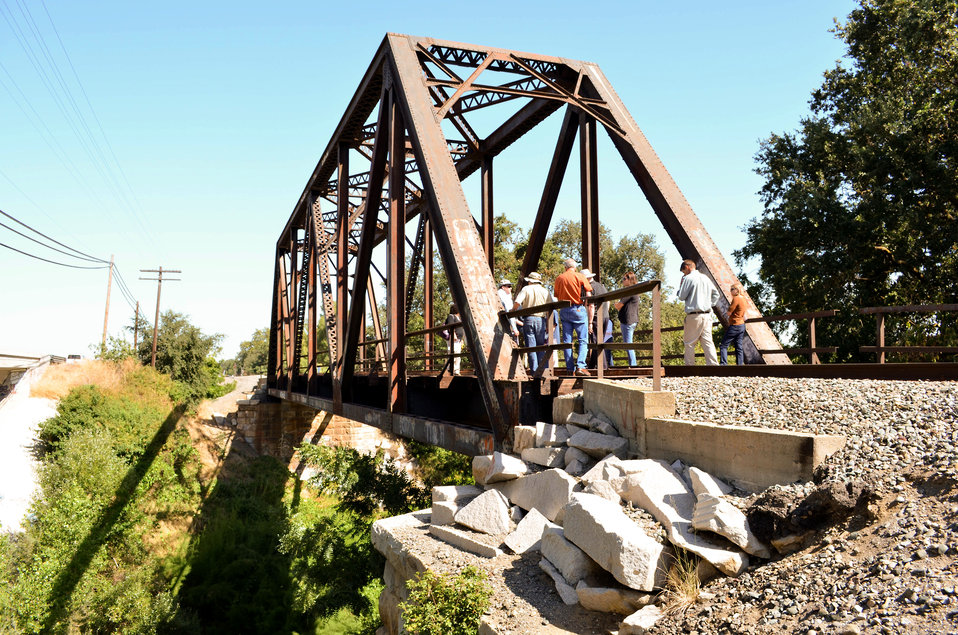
A view from the bridge

130715-A-QE256-010 – U.S. Army Corps of Engineers Sacramento District staff, officials from Woodland, Calif., and the California Department of Water Resources survey Cache Creek from a railroad bridge in Yolo County July 15, 2013. The district is looking at possible ways to reduce flood risk along the creek.